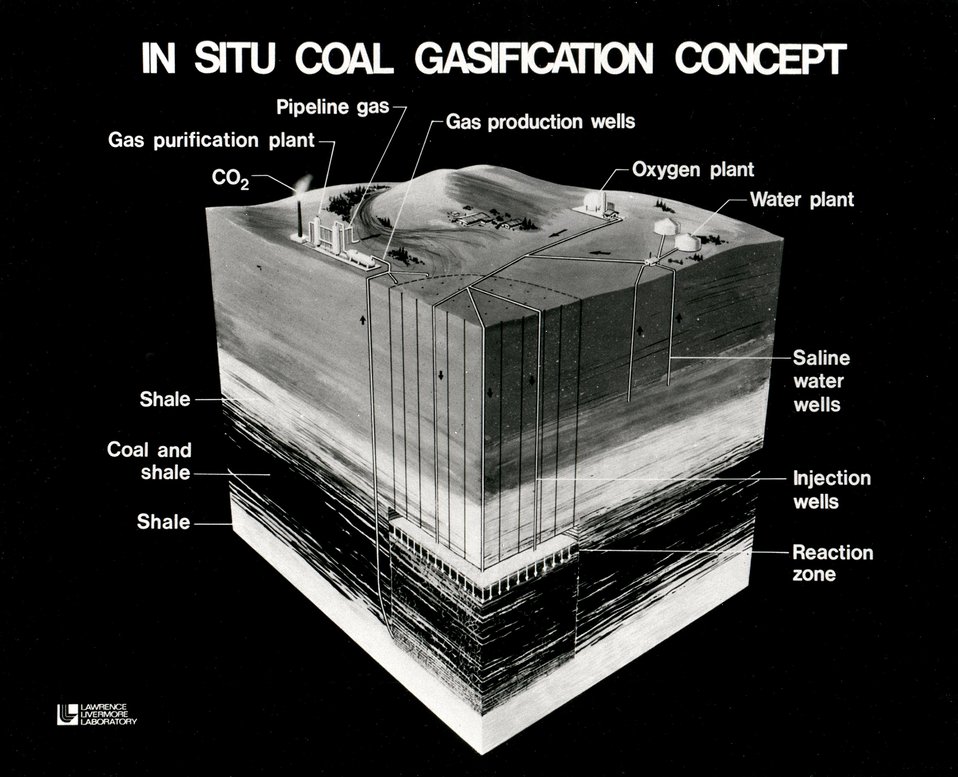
IN SITU COAL GASIFICATION CONCEPT...This concept for gasification of coal in its natural state would be accomplished by shattering the coal with conventional explosives, retorting it from the top of the bed down by starting a methane flame and sustaining combustion by water and oxygen spray, and piping the resulting methane gas from the bottom. Circa 1973.